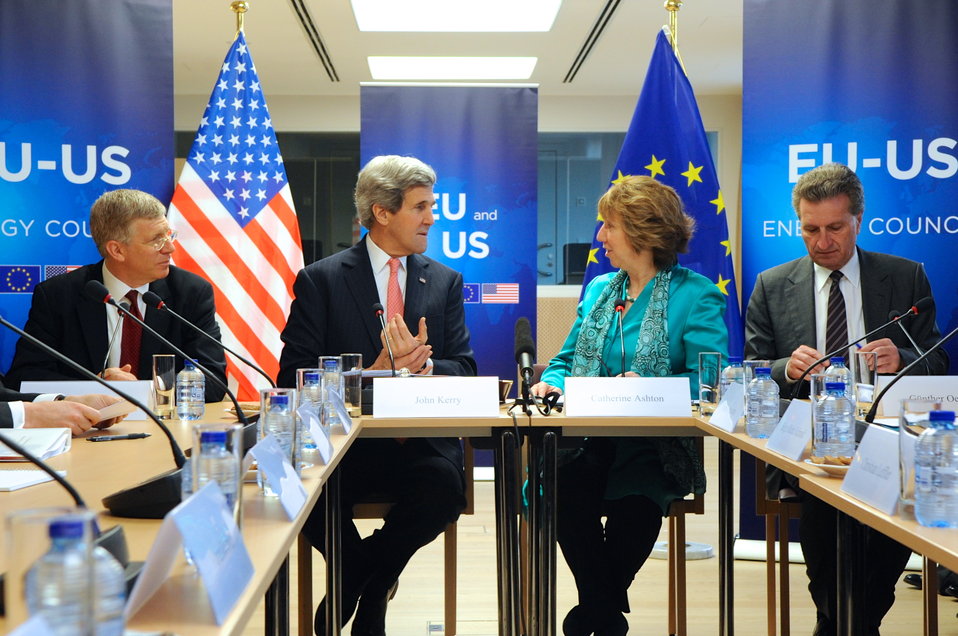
High Representative Ashton Addresses U.S.-EU Energy Council Meeting in Brussels

European Union High Representative for Foreign Affairs Catherine Ashton addresses U.S. Secretary of State John Kerry and U.S. Deputy Energy Secretary Daniel Poneman at the outset of a meeting focused on energy policy at the European Union External Action Service Headquarters in Brussels, Belgium, on April 2, 2014.